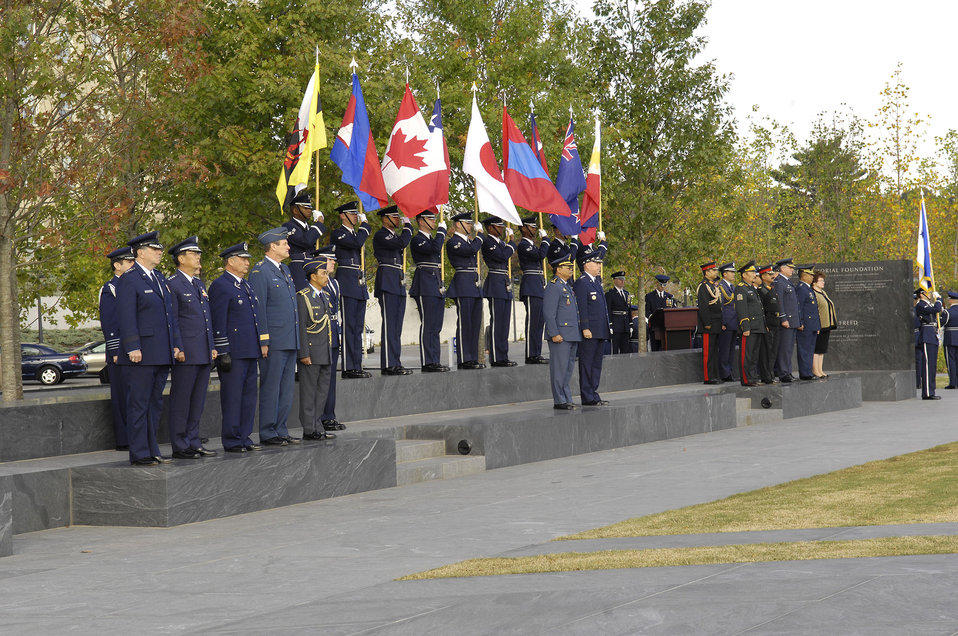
Air chiefs participate in wreath-laying ceremony

Air Force Chief of Staff Gen. T. Michael Moseley and Lt. Gen. Soeung Samnang, Cambodian Royal Air Force commander, attend a a foreign dignitary arrival and wreath-laying ceremony at the Air Force Memorial in Arlington, Va., on Tuesday, Oct. 24. The Pacific air chiefs from nine countries attended the event with Gen. Samnang representing them when he assisted General Moseley in the inspection of the troops.